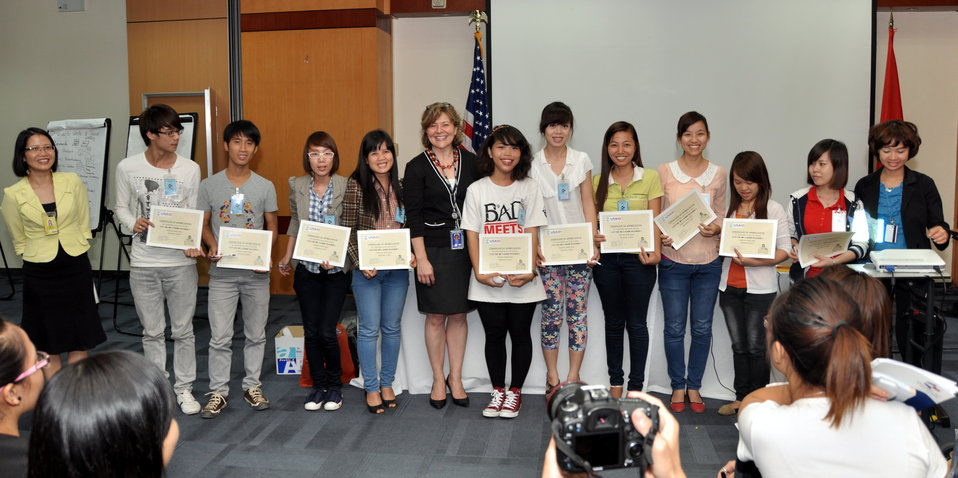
Students join the ‘USAID and Higher Education in Vietnam’ talk

Photo: @USAIDVietnam, November 19, 2012